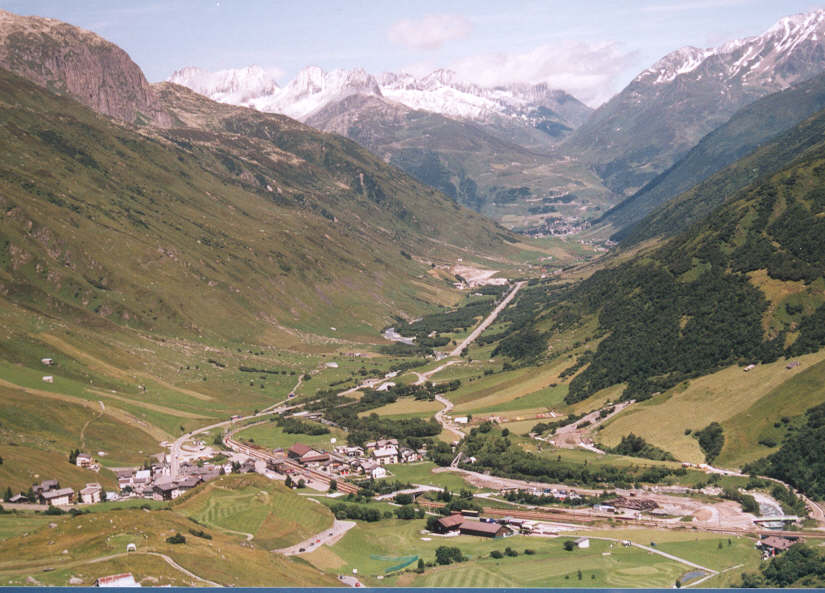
Nederlands: Blik op Realp en het station van de MGB en de DFB. Foto zomer 2001, Angélique Leunissen